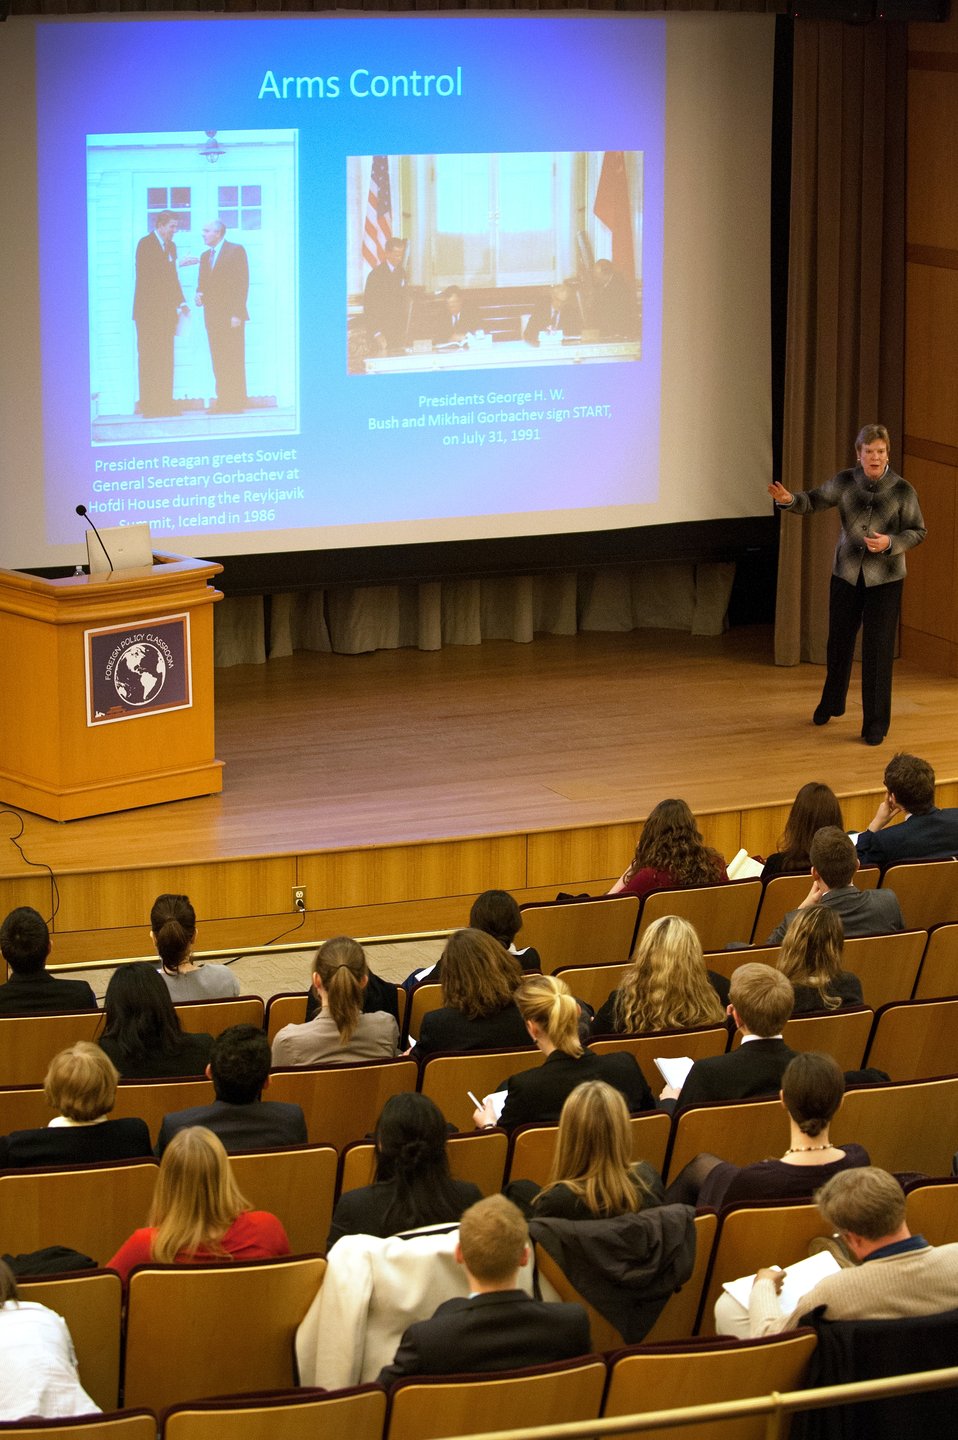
Acting Under Secretary Gottemoeller Participates in a Foreign Policy Classroom

Acting Under Secretary of State for Arms Control and International Security Rose Gottemoeller participates in the State Department-sponsored Foreign Policy Classroom at the U.S. Department of State in Washington, D.C., on February 27, 2013.